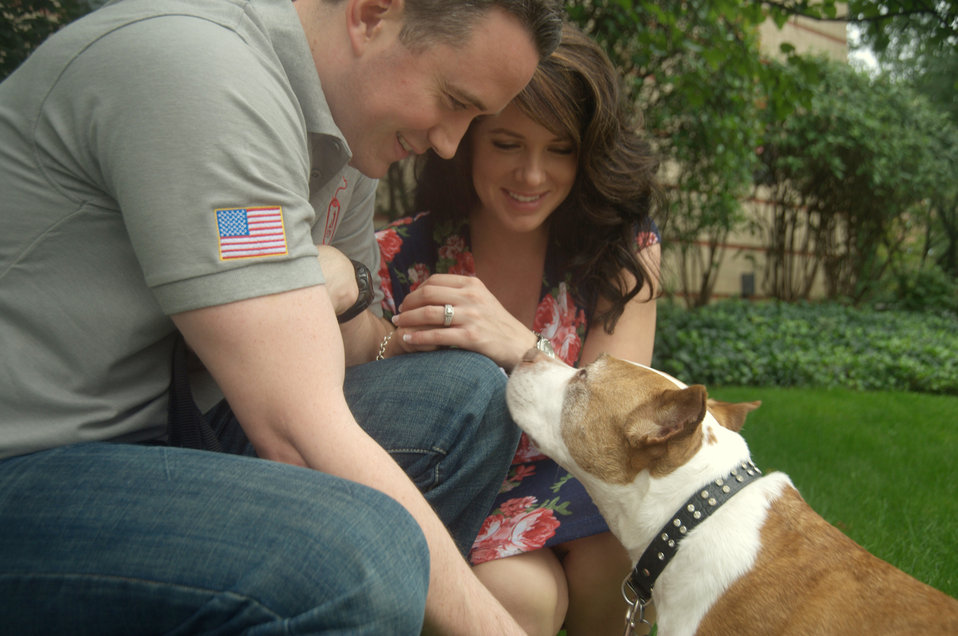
A life for a life

Former Senior Airman David Sharpe and his wife, Jenny, share a family moment with their dog Cheyenne outside their home Sept. 22, 2011, in Arlington, Va. Sharpe is the founder of Pets 2 Vets, a nonprofit organization that pairs shelter animals with veterans. Sharpe came up with the idea for P2V after he realized how Cheyenne’s companionship helped him deal with traumatic events he went through while deployed to Saudia Arabia.